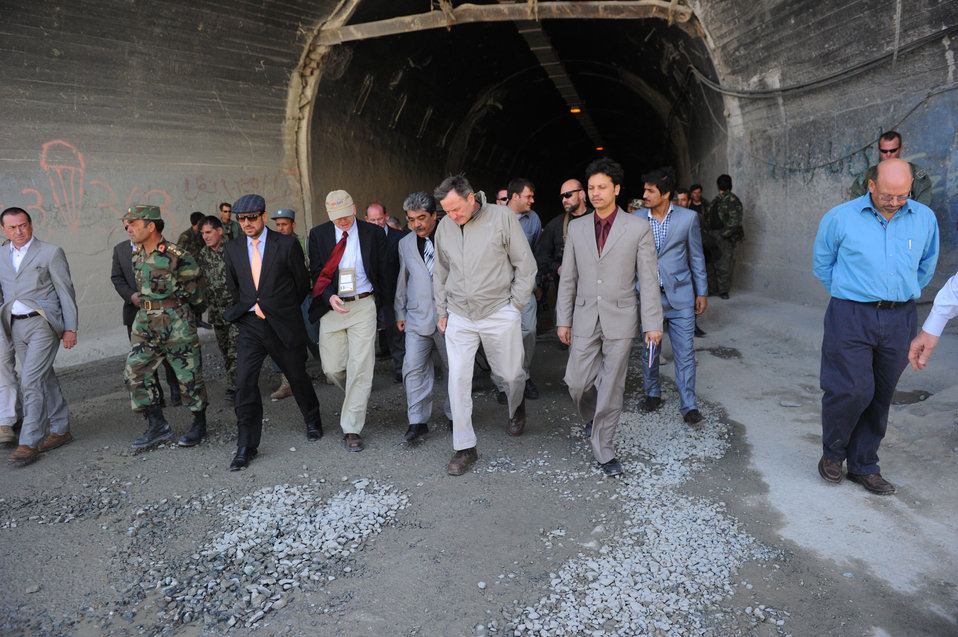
U.S. Ambassador Karl W. Eikenberry attends a ceremony to mark the beginning of renovations at the Salang Tunnel on the border of Parwan and Baghlan Provinces, Afghanistan, on Wednesday, June 15, 2011. (S.K.Vemmer/Department of State)